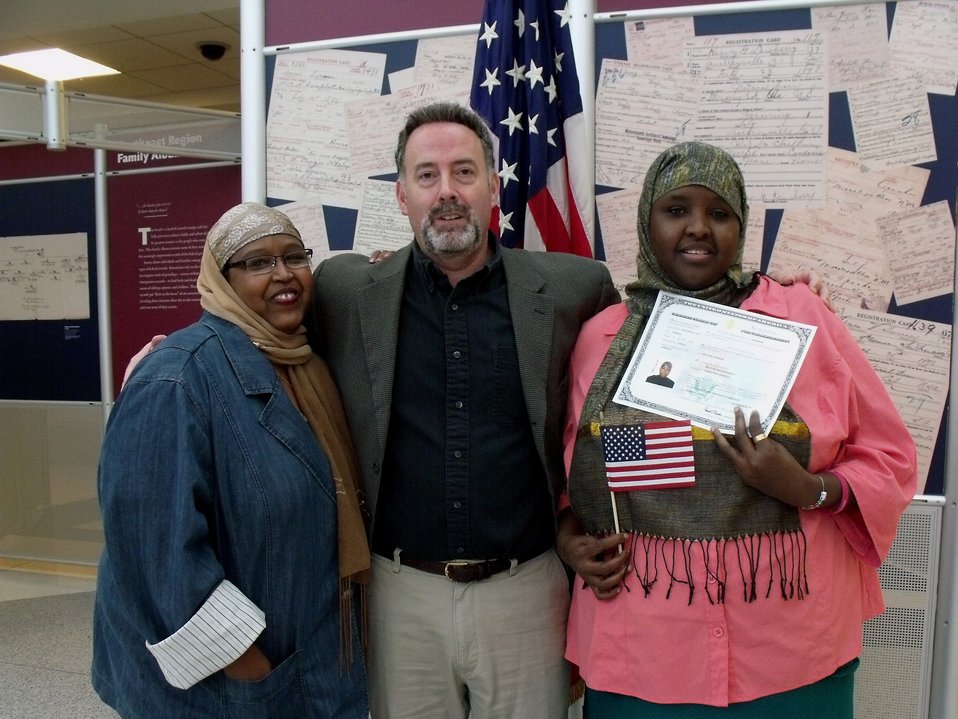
New Citizens